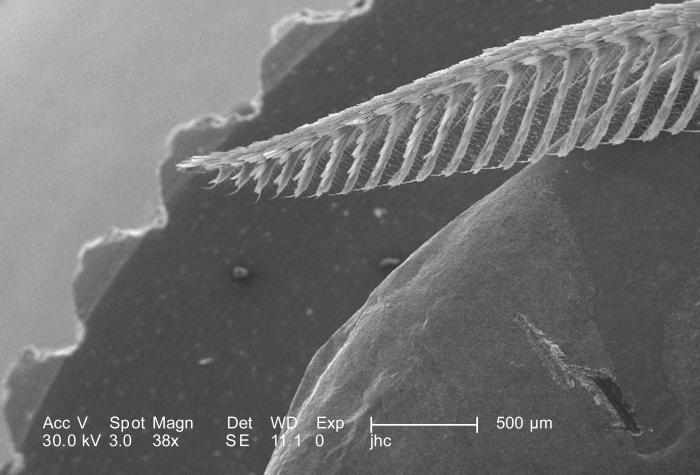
Under a low magnification of 38X, this scanning electron micrograph (SEM) revealed some of the ultrastructural morphology located on the head region of an unidentified white moth, which had been found deceased on the ground in the suburbs of Decatur, Georgia. Note the 'fern-like', antenna, which was one on the two emanating from the insect's head region.